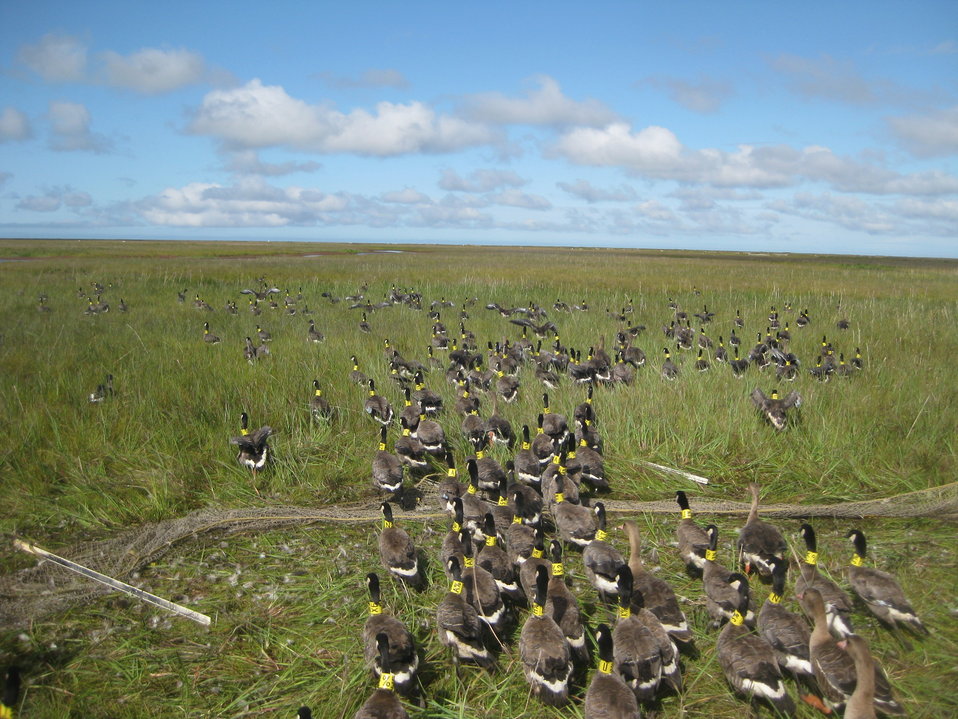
Free!!

Approximately 95% of the total cackling [Canada] goose population (Branta hutchinsii minima) breed on the Yukon-Kuskokwim Delta (YKD). The U.S. Fish and
Wildlife Service has been monitoring cackling geese on the YKD annually since 1998. In 2011, the Pacific Flyway Council and USFWS reviewed procedures that have been used to estimate the fall population size of cackling geese since 1998. Based on that review, the Pacific Flyway Council adopted a new interim monitoring method for estimating populations and
recommended that USFWS verify the population
estimates using a mark-resight method, focused on
capturing cackling geese on the breeding grounds and
resighting on the wintering areas. Accordingly, a 3-year
program was initiated in 2011. Information from this
study should provide an independent assessment of the cackling goose population size.

USFWS Yukon Delta NWR